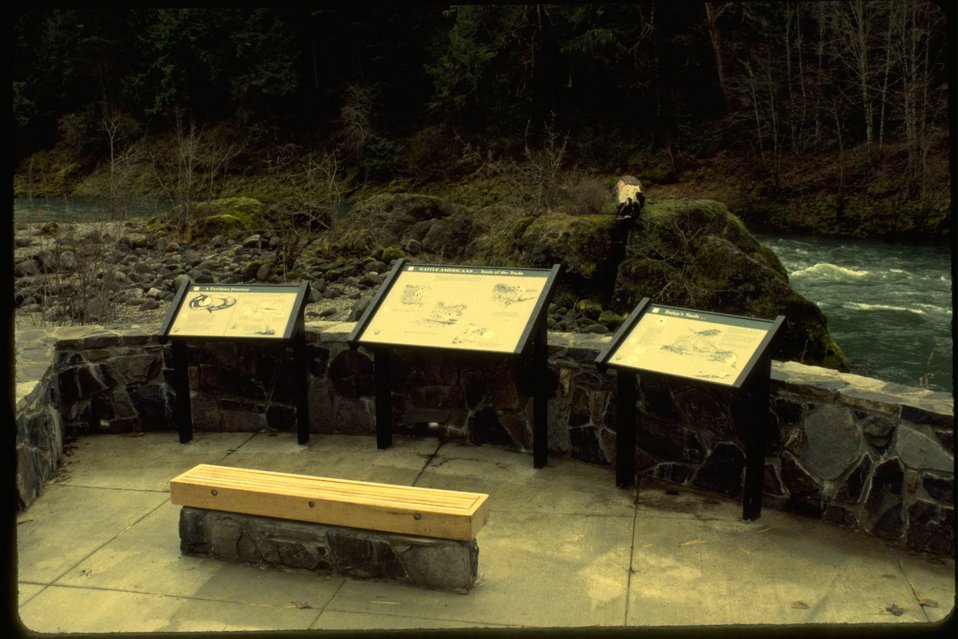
Wayside interpretive panels, wall mounted.